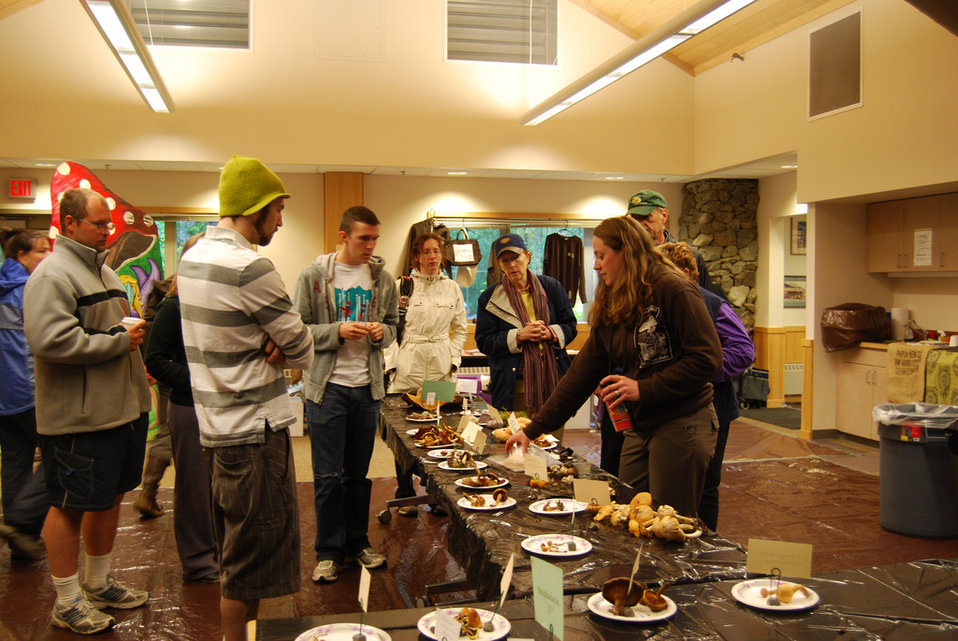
Mushroom fungus fair

U.S. Forest Service Chugach National Forest ecologist Kate Mohatt talks with visitors at the annual Fungus Fair in Girdwood, AK. The mushroom identification table is a popular feature of the Glacier Ranger District’s educational outreach to the public.